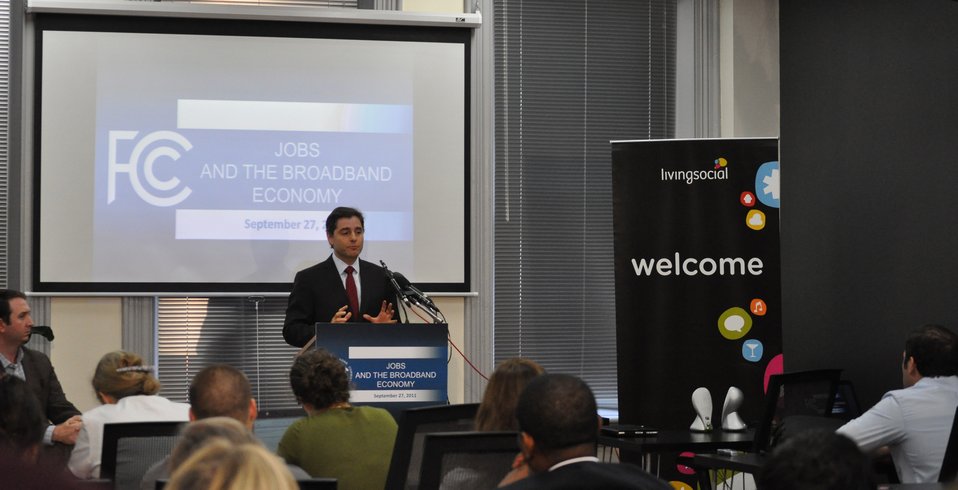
Jobs and the Broadband Economy

FCC Chairman Genachowski